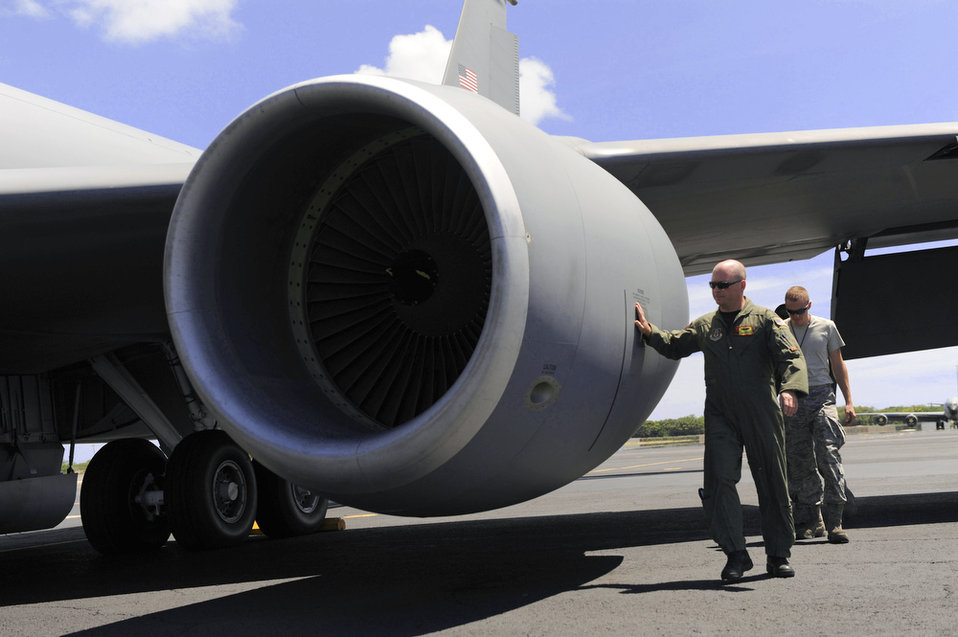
Refuelers keep aircraft flying during exercise

Maj. Benjamin Evans, a KC-135 Stratotanker pilot from the 507th Air Refueling Wing at Tinker Air Force Base, Okla., along with maintainers from the wing's 507th Maintenance Squadron, conduct a walk-around inspection of a tanker July 20, 2010, before departing Joint Base Pearl Harbor-Hickam, Hawaii, to refuel aircraft participating in the Rim of the Pacific exercise. RIMPAC, the world's largest maritime exercise, is a biennial event which stresses interoperability among the 14 nations participating in the exercise.